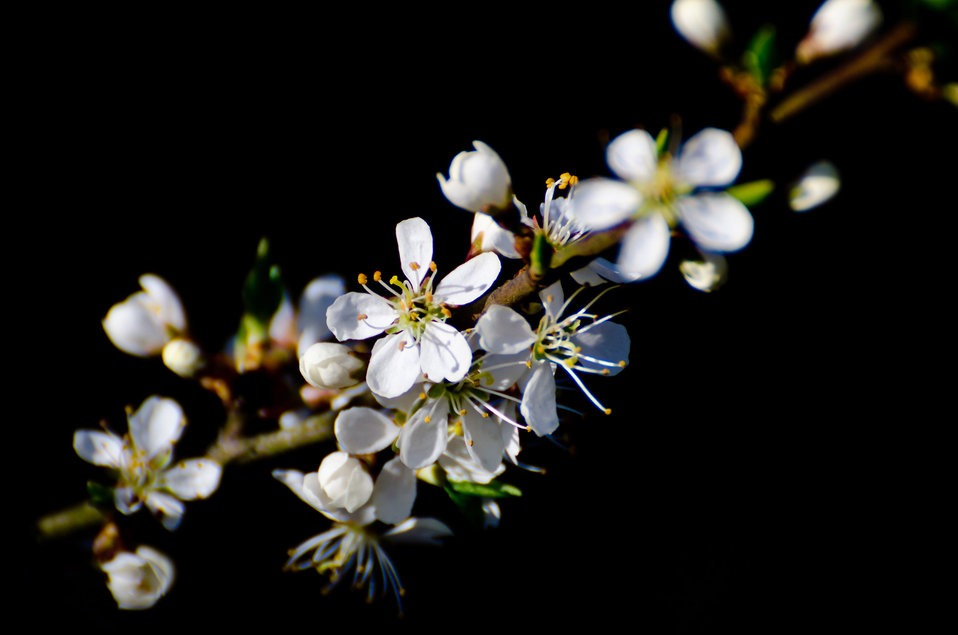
Spring flowers

Spring flower on the branch.